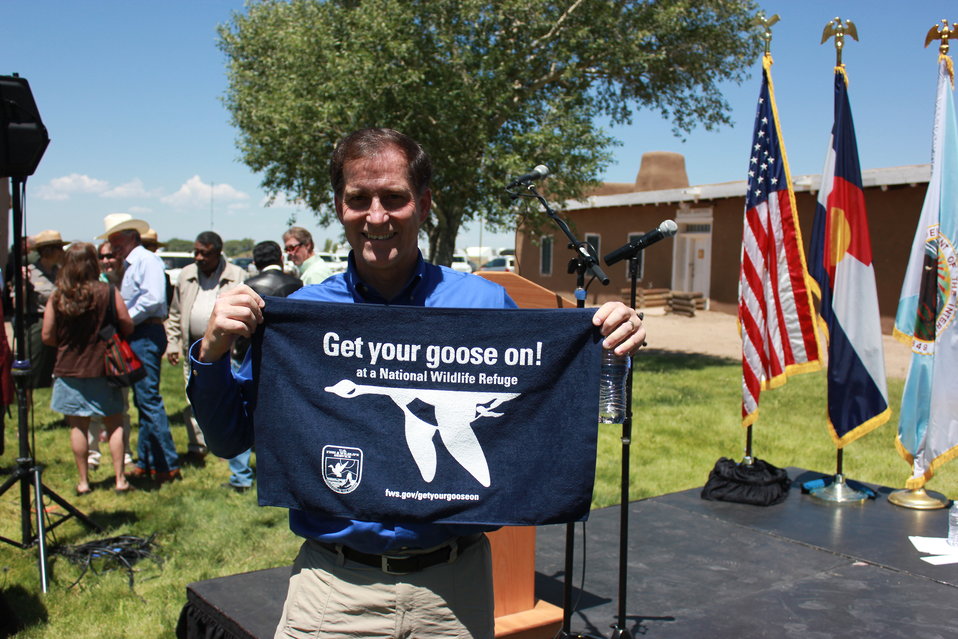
Dan Ashe, Director of the U.S. Fish and Widllife Service, Get his Goose On!

Taken during the historic announcement of a 90,000-acre conservation easement donation in southern Colorado.